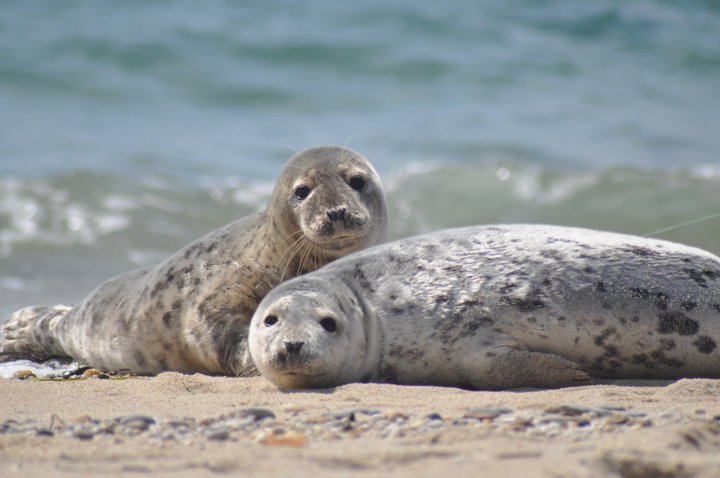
Seals at Nantucket National Wildlife Refuge in Massachusetts.